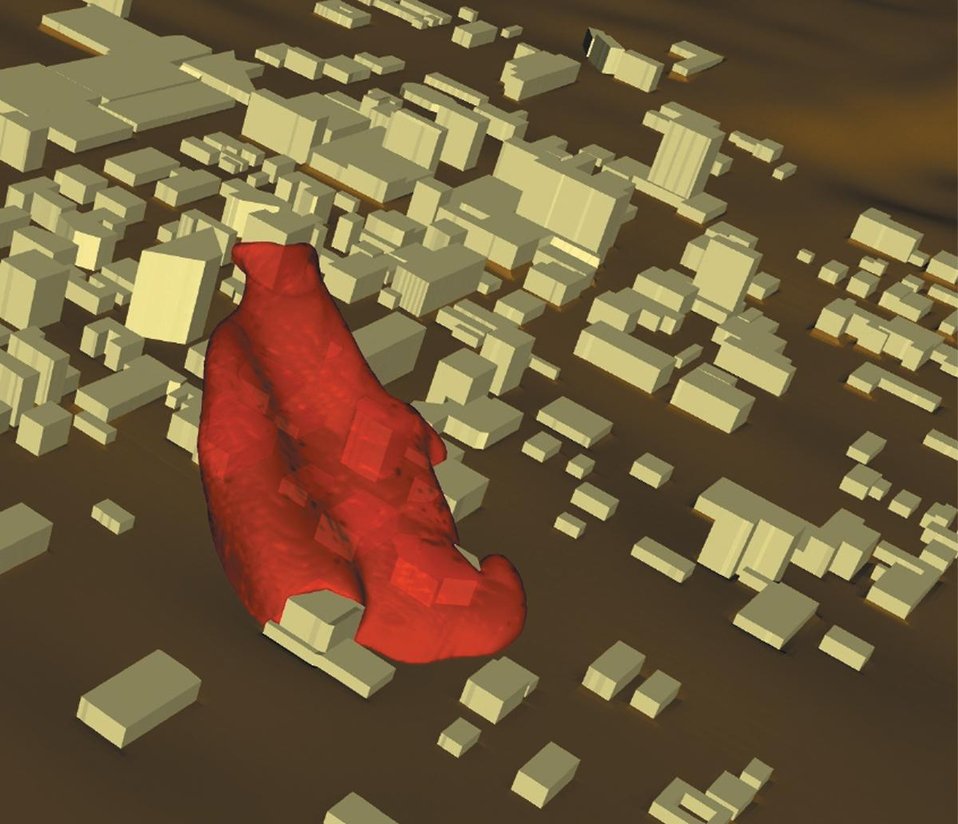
EXAMPLE OF TERASCALE COMPUTING RESOURCES ON THE ASCI WHITE AT LAWRENCE LIVERMORE NATIONAL LAB.

TERASCALE COMPUTING RESOURCES ON ASCI (ACCELERATED STRATEGIC COMPUTING INITIATIVE) WHITE WERE USED TO CAPTURE SIMULTANEOUSLY THE LOCAL TOPOGRAPHICALLY DRIVEN DYNAMICS AND LARGER FEATURES OF MIXING PROCESSES IN ORDER TO PREDICT THE TRANSPORT AND MIXING OF POLLUTION OR HAZARDOUS RELEASES IN AN URBAN ATMOSPHERE.